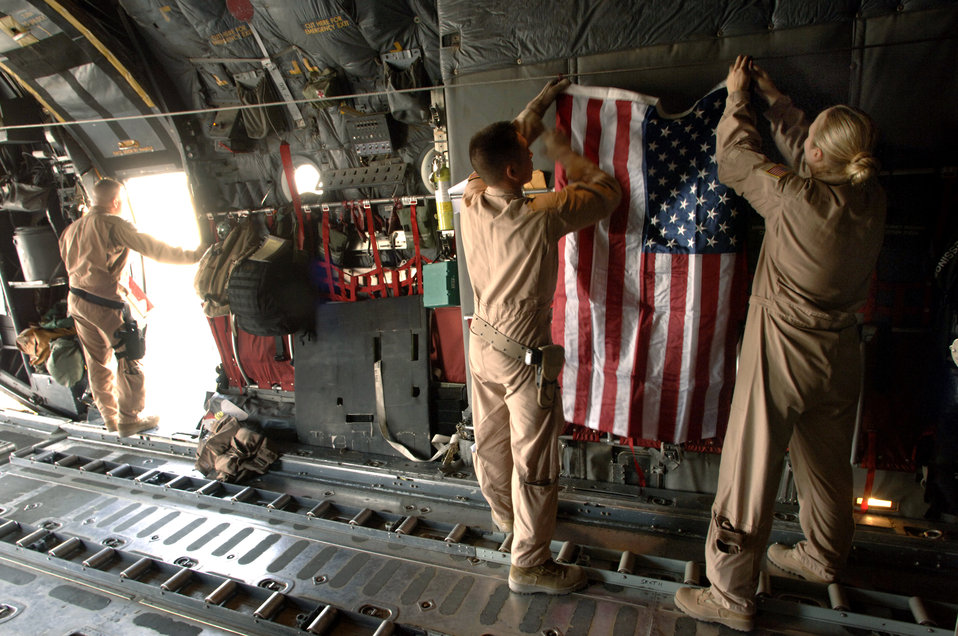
Aeromedical evacuation mission

Prior to an aeromedical evacuation mission over Southwest Asia, flight medics Senior Airman Jeremy Ray and Staff Sgt. Kristy Vandergriff hang a U.S. flag in a C-130 Hercules that will serve as a